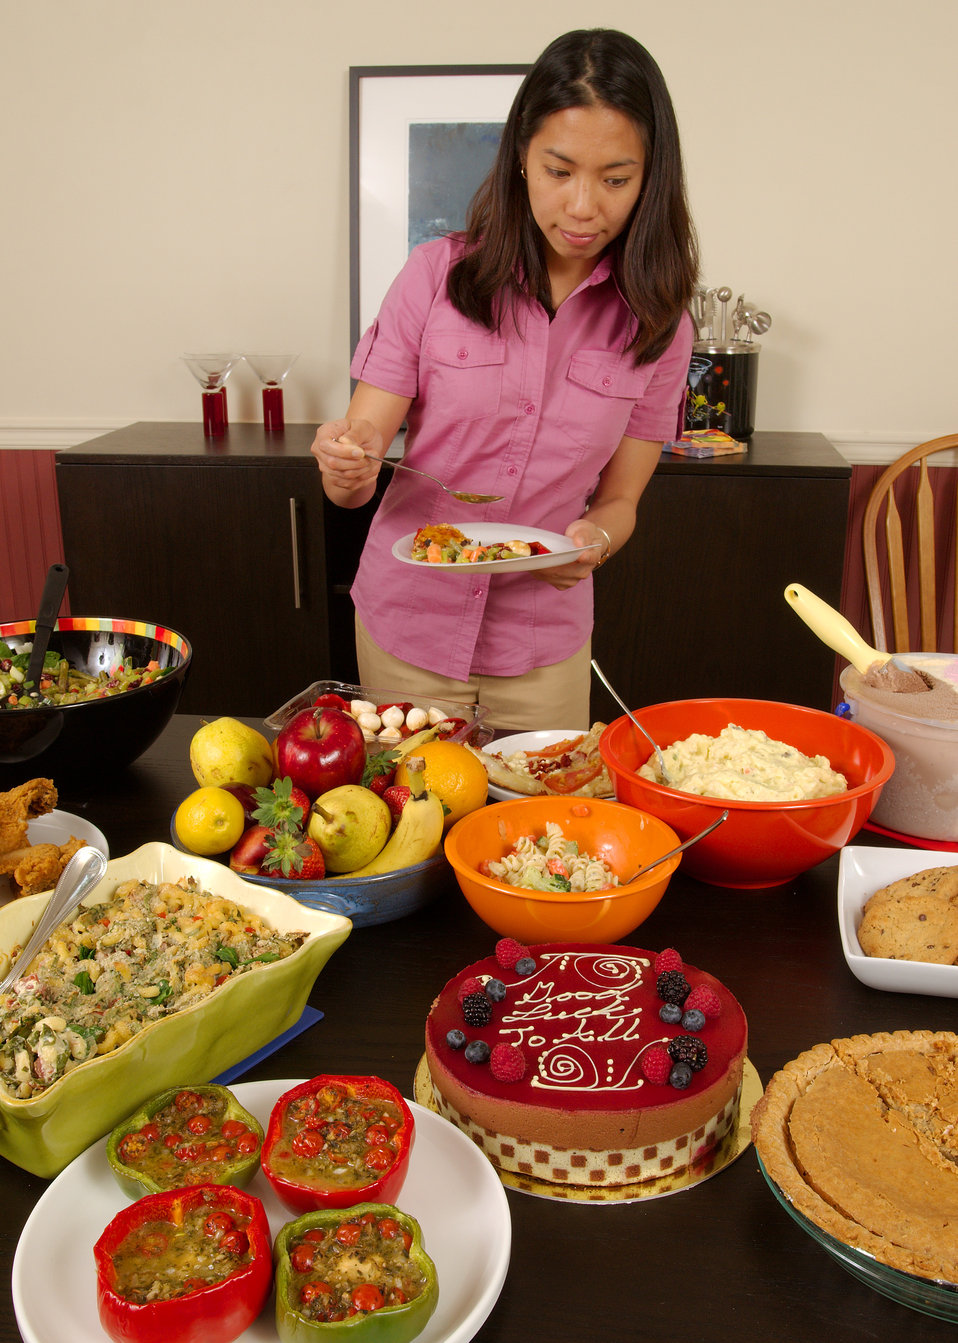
This image depicts a young woman serving herself from a dining table, atop which was plated a large quantity of foods representing a number of different food groups: grains, fruits, vegetables, milk products, meats/poultry/fish, and nuts/seeds/legumes. Here, she was contemplating some of the other choices that were available.